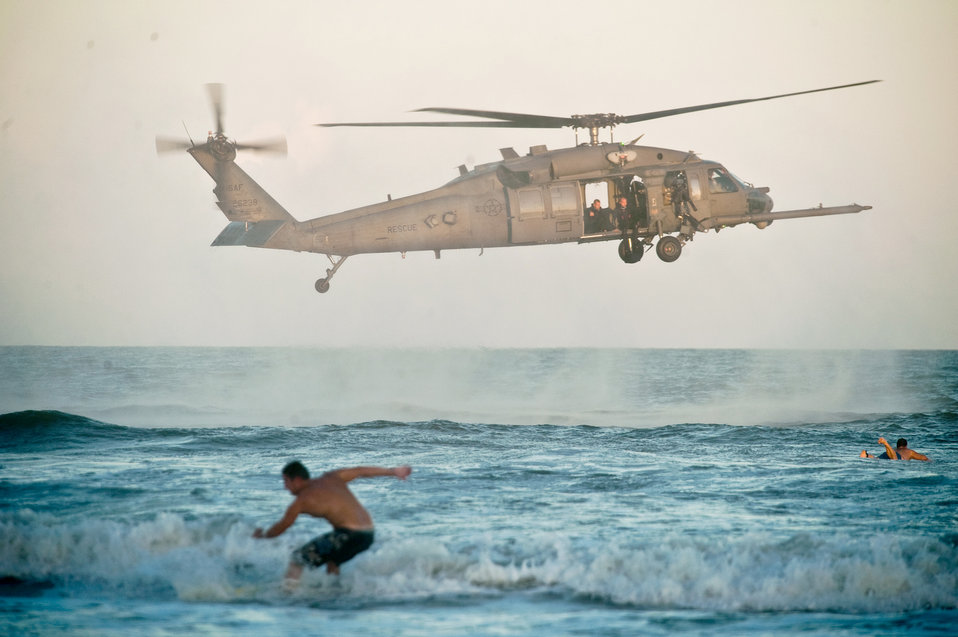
Pararescuemen participate in Air Force Week

A surfer catches a wave as pararescuemen in an HH-60G Pave Hawk prepare to descend to the water during a rescue demonstration Oct. 27, 2010, at Cocoa Beach, Fla. The demonstration was part of Air Force Week Cocoa Beach, a weeklong event is meant to showcase Air Force capabilities and increase public awareness. The pararescuemen are from the 920th Rescue Wing at Patrick Air Force Base, Fla.